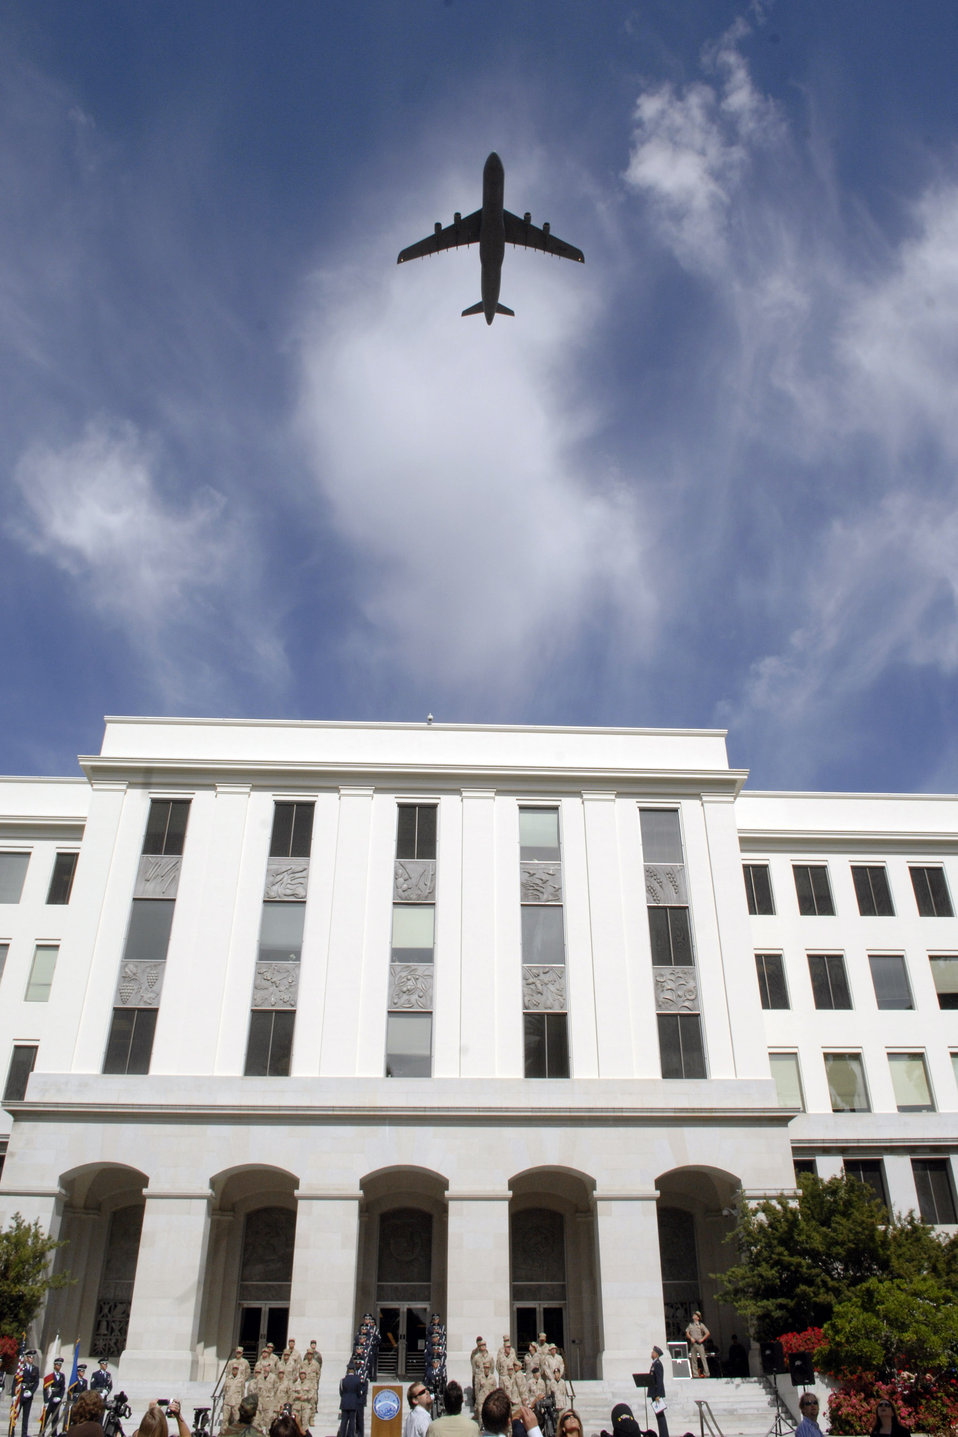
Flying over the capitol

A C-5 Galaxy from Travis Air Force Base, Calif., flies over the California State Capitol June 4 during Air Force Week in Sacramento, Calif. Air Force Week educates the public about the role of the Air Force in America's national defense.